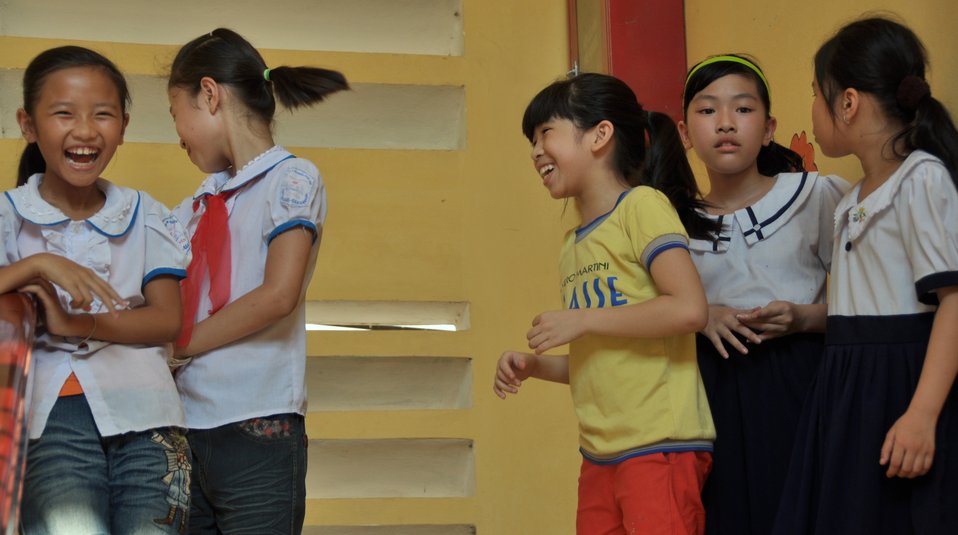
USAID supports deworming education and medication distribution in Bac Giang Province

May 20, 2013